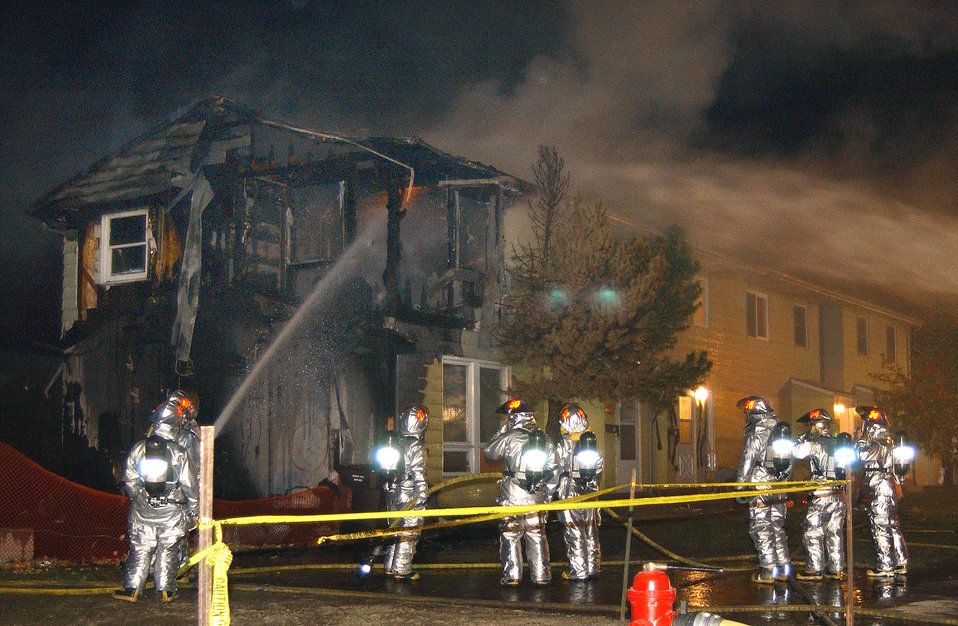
Blaze destroys base housing unit

MINOT AIR FORCE BASE, N.D. -- Firefighters here extinguished an early morning fire that destroyed a four-family military housing complex Oct. 12. The three families living in the complex were evacuated with no injuries. Officials from the 5th Civil Engineer Squadron's fire emergency services flight and the Office of Special Investigations are investigating the cause of the fire.